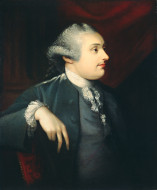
01-Bentinck William Henry Cavendish, 3rd Duke of Portland c 1774